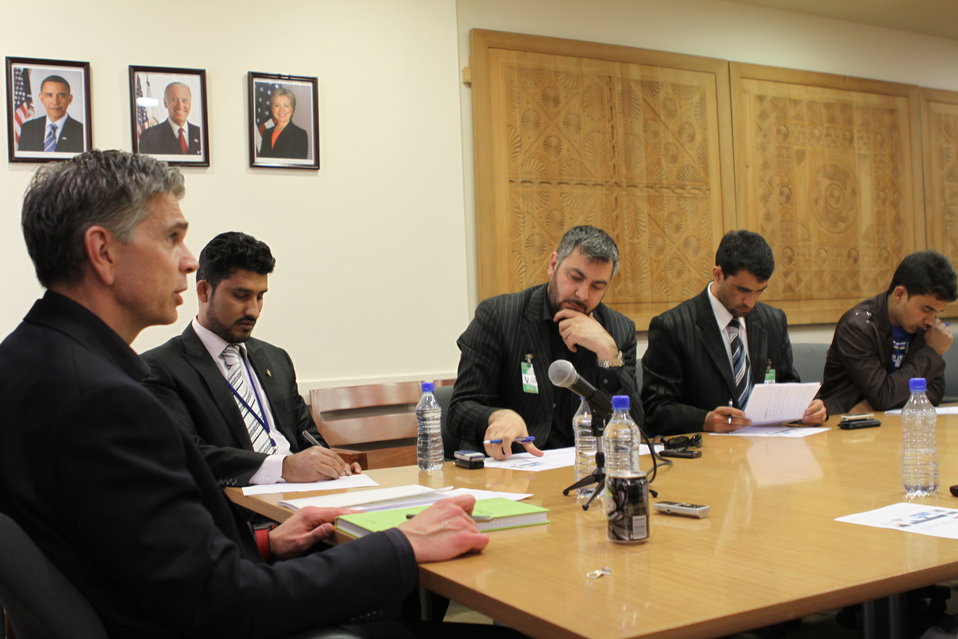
USAID Mission Director Earl Gast Conducts a Media Roundtable with Afghan Media, March 17, 2011